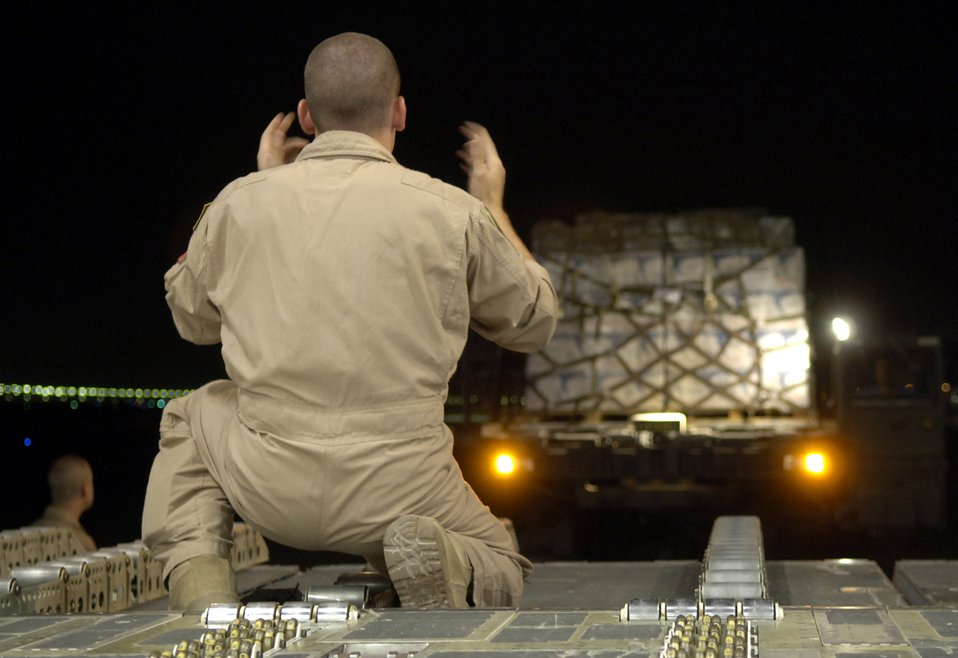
Supplies bound for Cyprus

Airman 1st Class William Graham guides a K-loader up to the ramp of a C-17 Globemaster III in Southwest Asia on July 22. C-17 crews from the 816th Expeditionary Airlift Squadron are filling their cabins with pallets of supplies such as water, Meals, Ready to Eat and cots for the American citizens leaving Lebanon. This C-17 transported 17 pallets, about 64,000 pounds, of cargo to Cyprus on this mission. Airman Graham is a loadmaster with the 816th EAS.